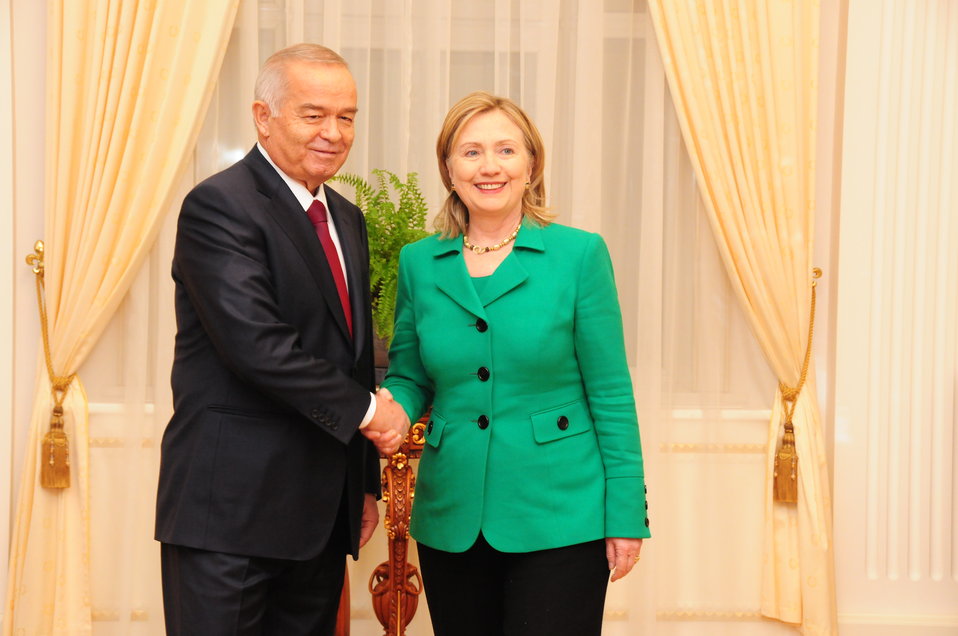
Secretary Clinton Shakes Hands With Uzbek President Karimov

Uzbek President Islam Karimov shakes hands with U.S. Secretary of State Hillary Rodham Clinton to the meeting room in Tashkent, Uzbekistan, on December 2, 2010.